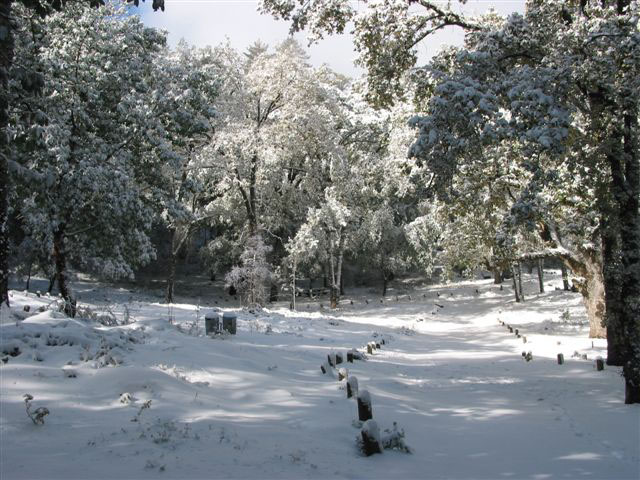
White Oaks Camp winter, in Los Padres National Forest, in Monterey County, CA, on November 21, 2010.